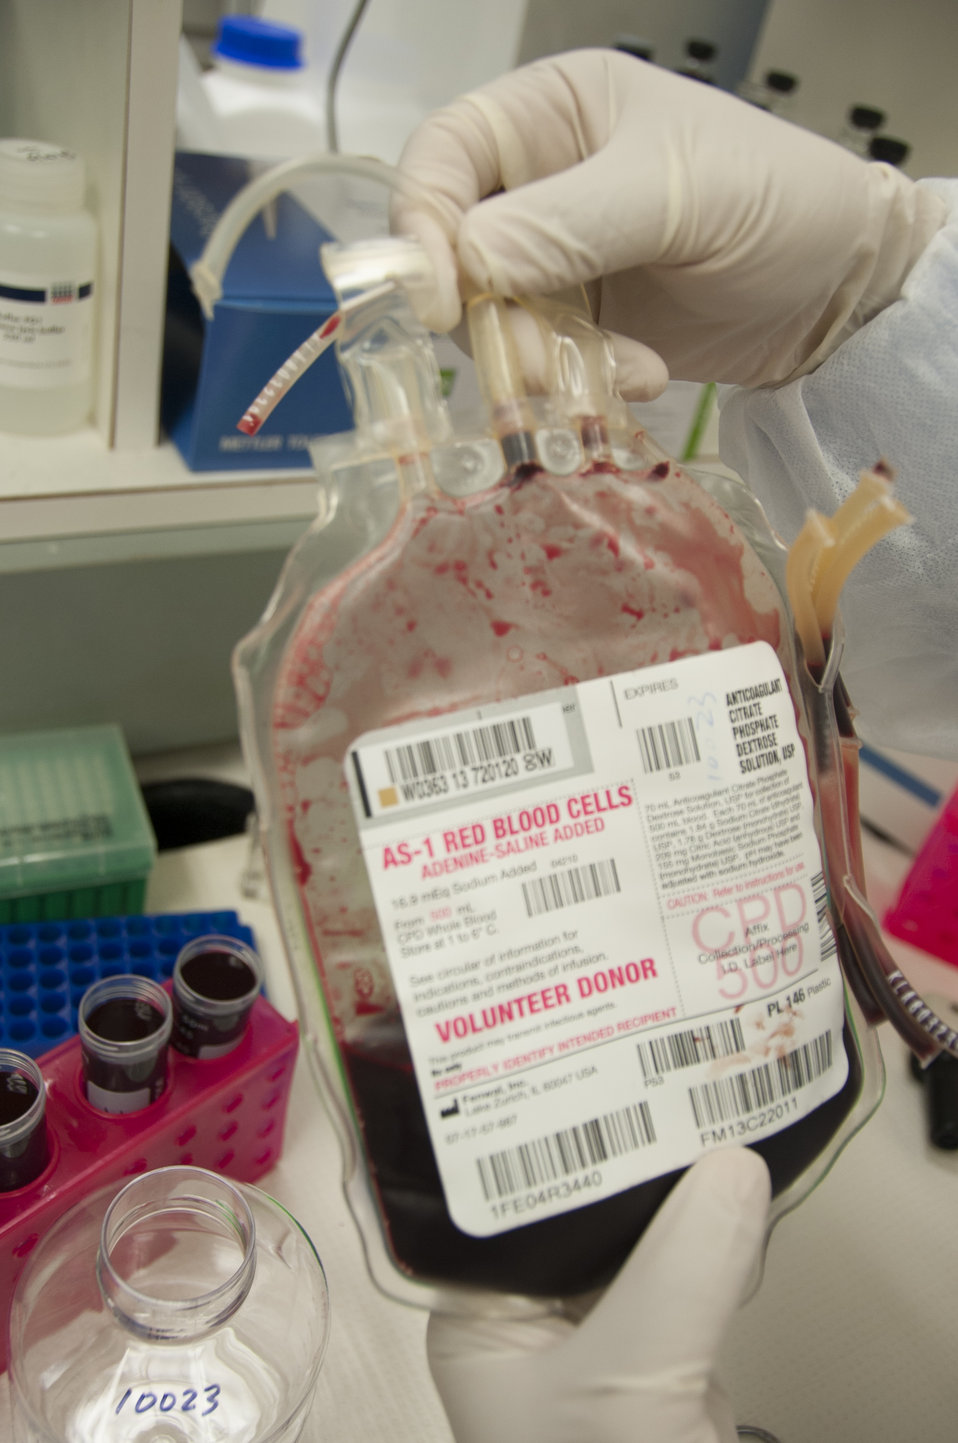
Blood Research: Saving Lives (8370

Jason Liu, Ph.D., a laboratory chief at FDA’s Office of Blood Research and Review, verifies the labeling of a unit of blood. FDA is responsible for the safety of our nation’s blood supply and is at the forefront of evaluating and encouraging innovative technologies for protecting it.

Read this Consumer Update to learn more: Advances in Saving Lives with Blood